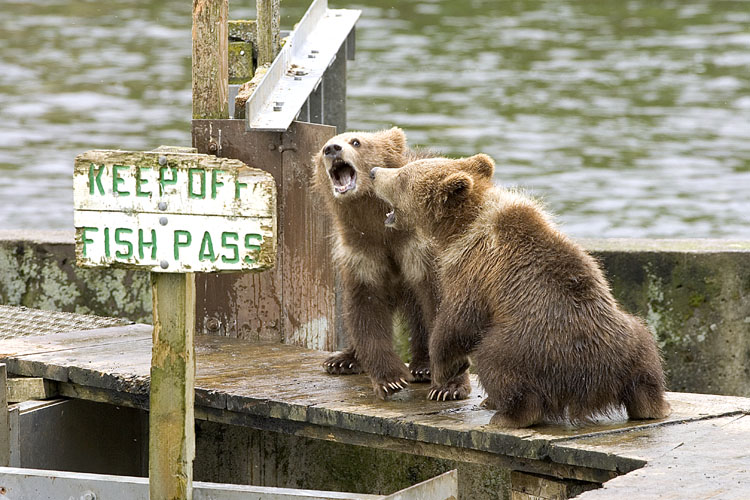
Wildlife of Kodiak Refuge